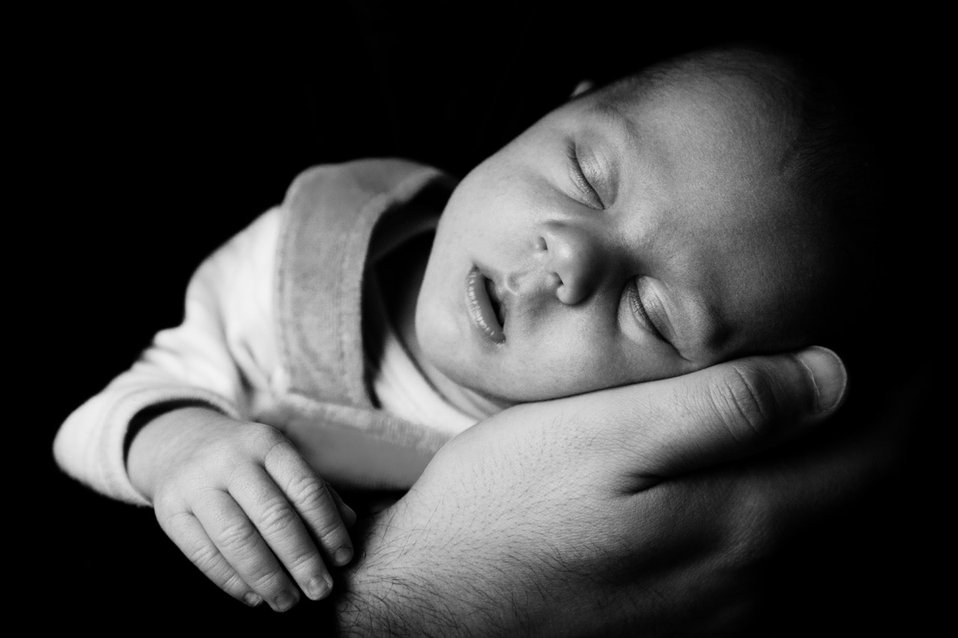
Sleeping baby on a hand

Small baby is sleeping on his father's hand.